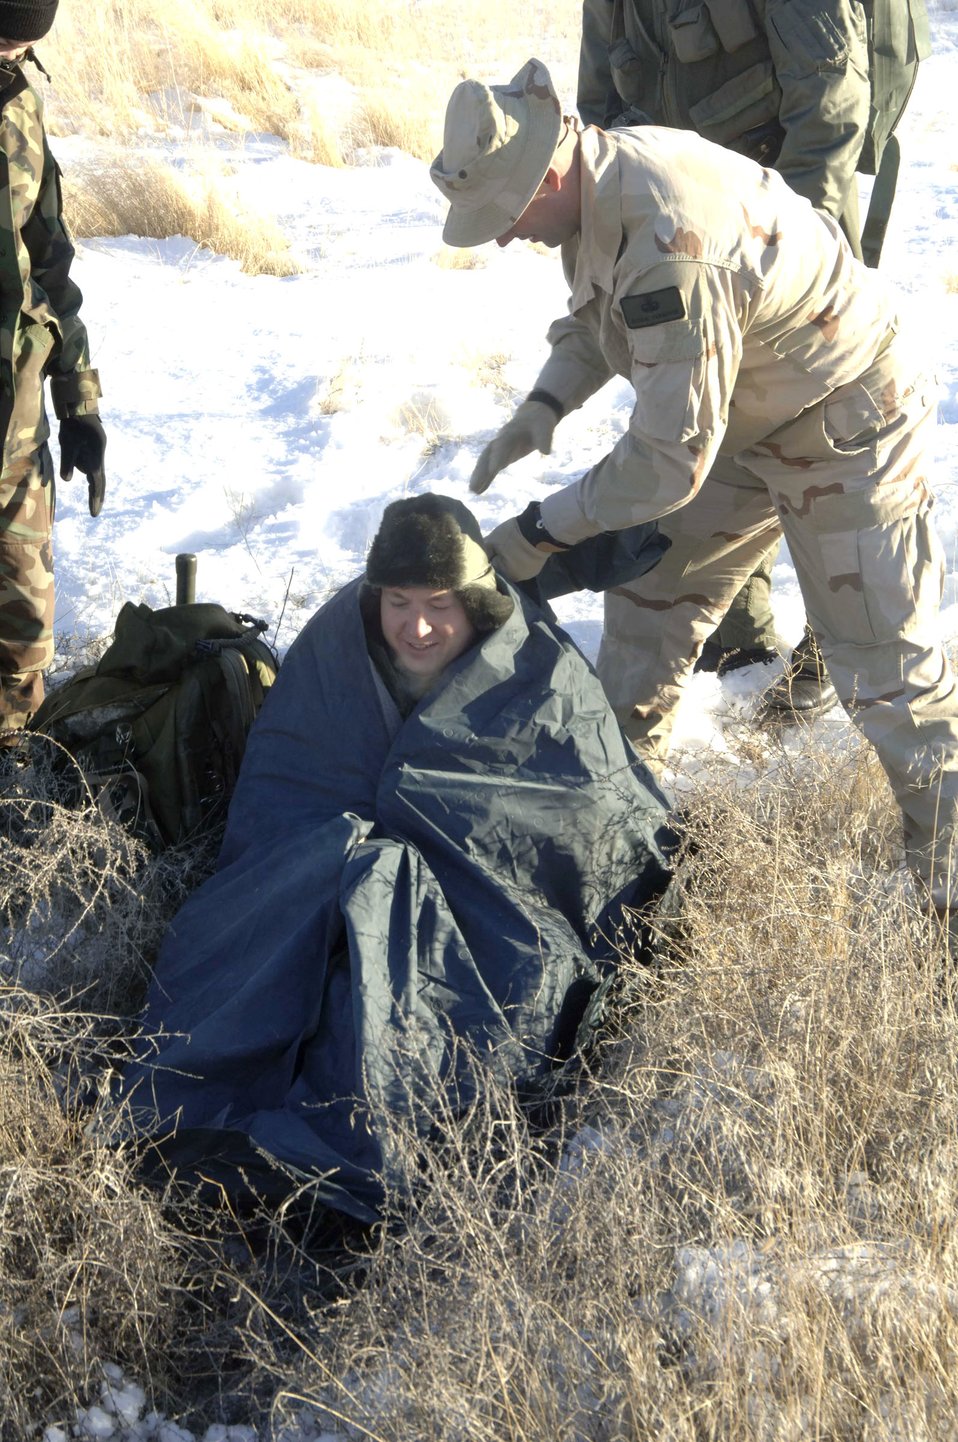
Train to survive

MOUNTAIN HOME AIR FORCE BASE, Idaho -- A life raft may seem like it only has one purpose, but during a recent combat survival training exercise, its extra layer of protection and added warmth shielded students from the frigid cold snow-covered ground. Tech. Sgt. Micheal Ferguson encourages students to think outside the box when it comes to using their equipment.